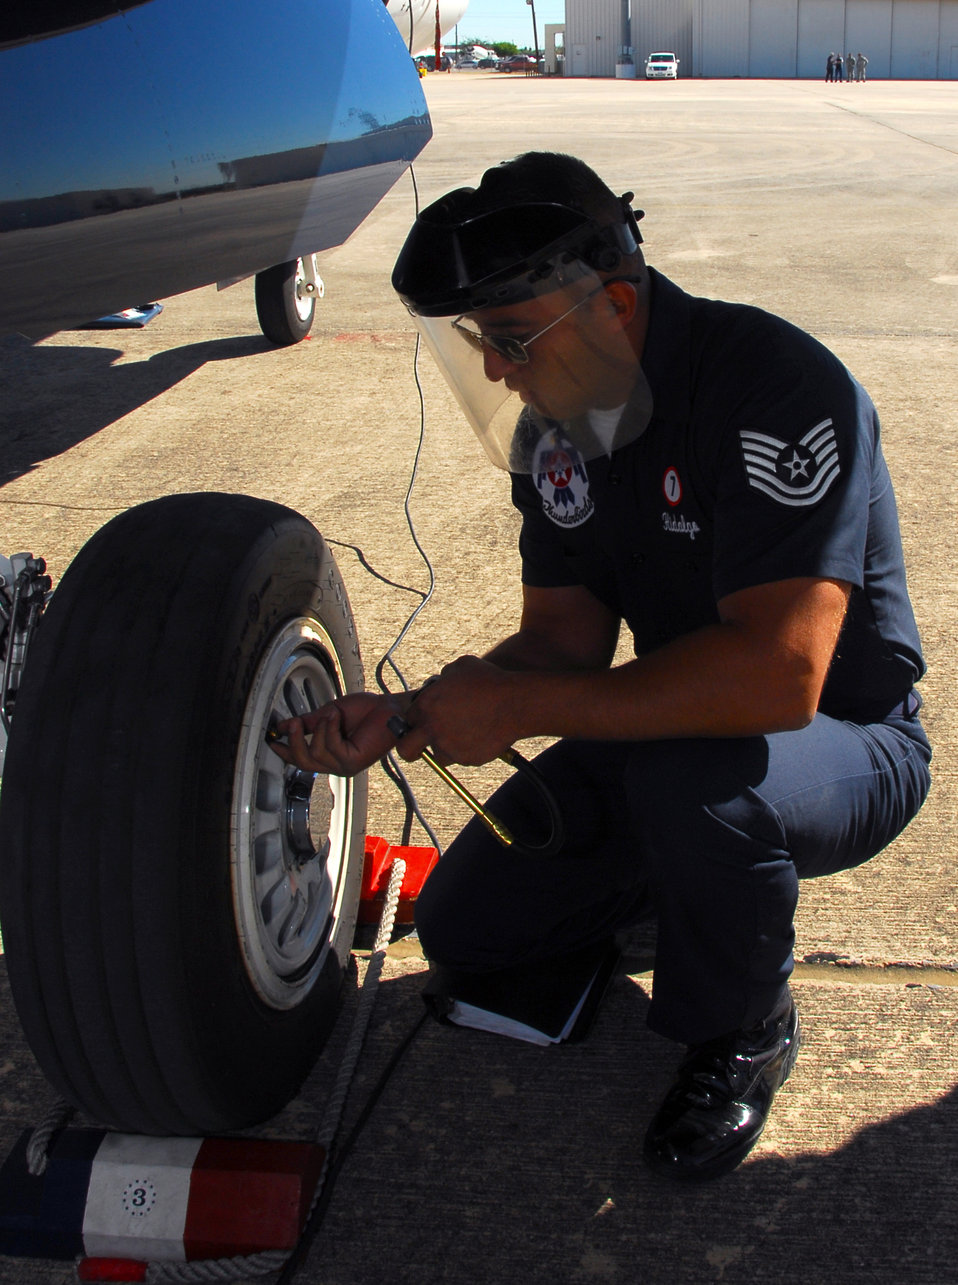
Thunderbirds maintainers keep show running behind the scenes

Tech. Sgt. Jose Hidalgo checks the tire pressure on an Air Force Thunderbird F-16 Fighting Falcon during his pre-inspection Nov. 5, 2010, at Lackland Air Force Base, Texas. Sergeant Hidalgo is a Thunderbirds assistant crew chief. The air demonstration team was at Lackland AFB to perform during AirFest 2010.